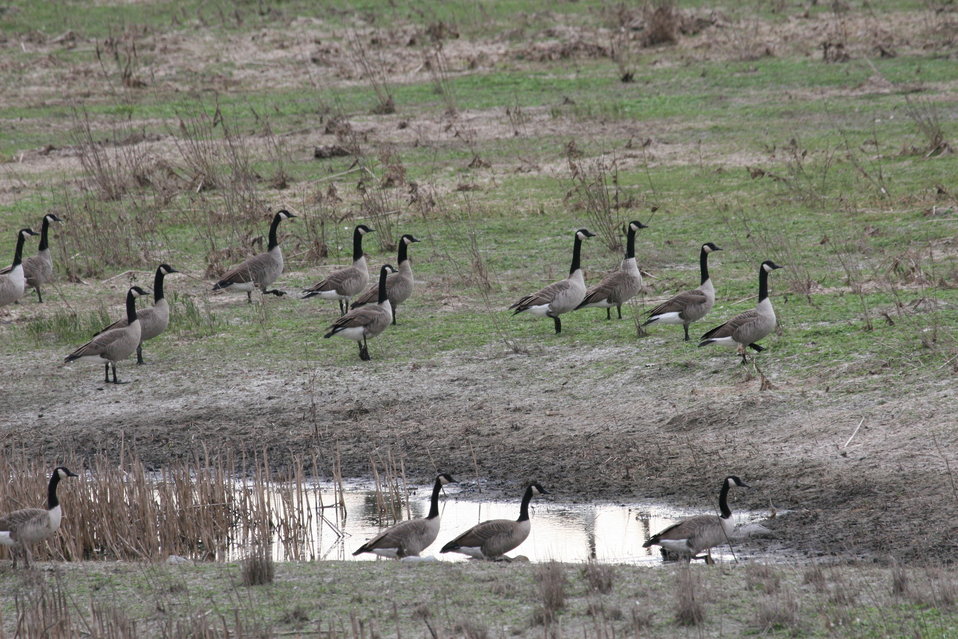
Fall on the Refuge - Canada Geese